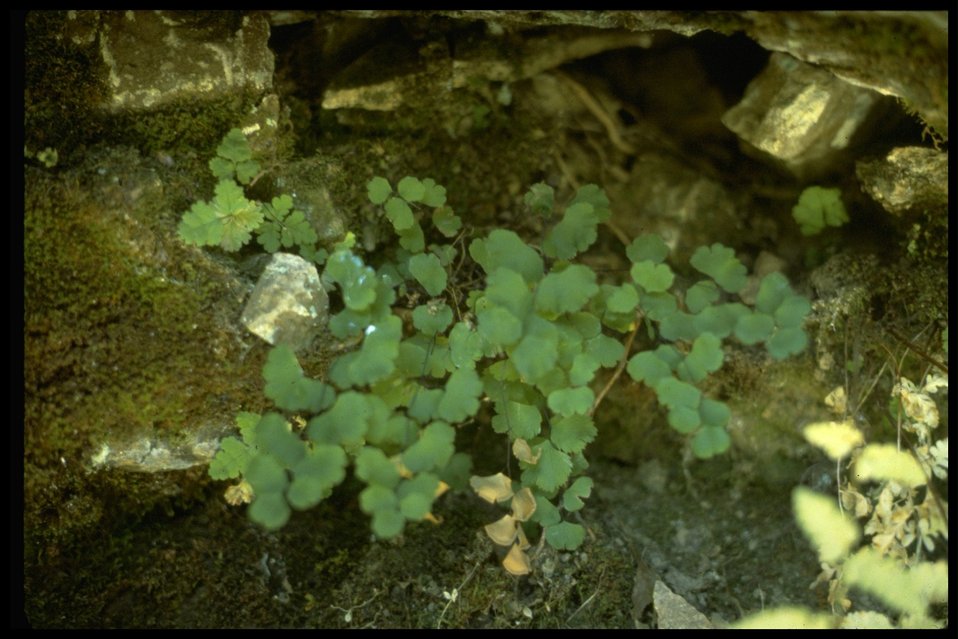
Medium shot of California maidenhair fern (Adiantum jordanii).